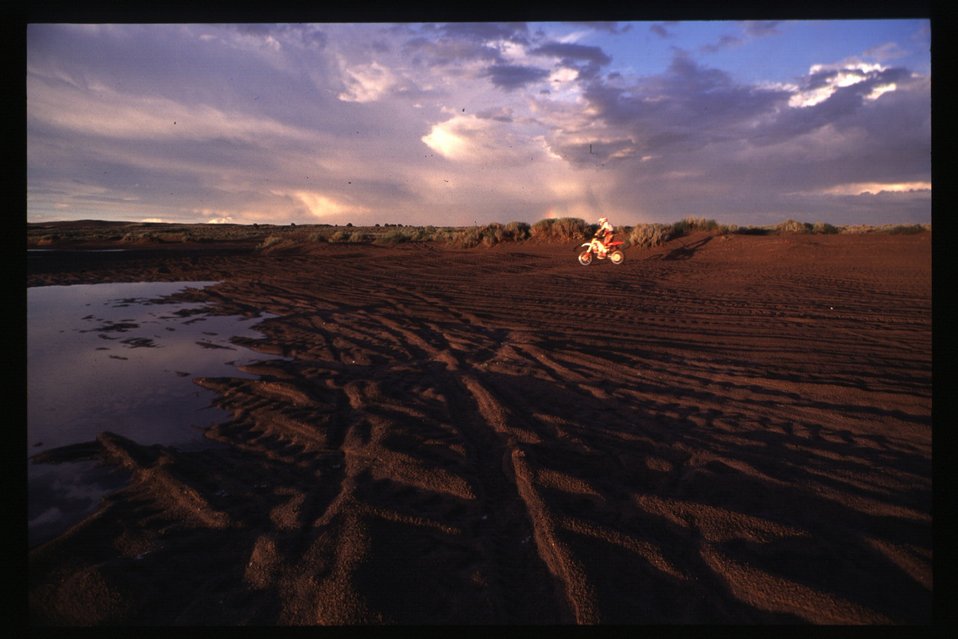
Recreation St Anthony Sand Dunes Off Highway Vehicles Idaho Falls Field Office USRD Upper Snake River District